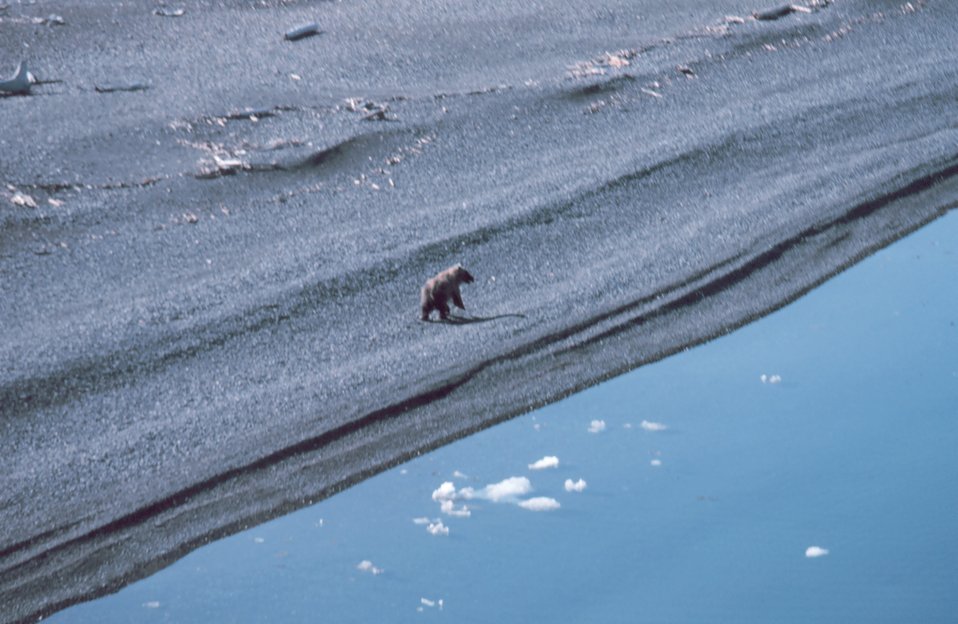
Brown bear - Ursus arctos - on the shore of the Beaufort Sea